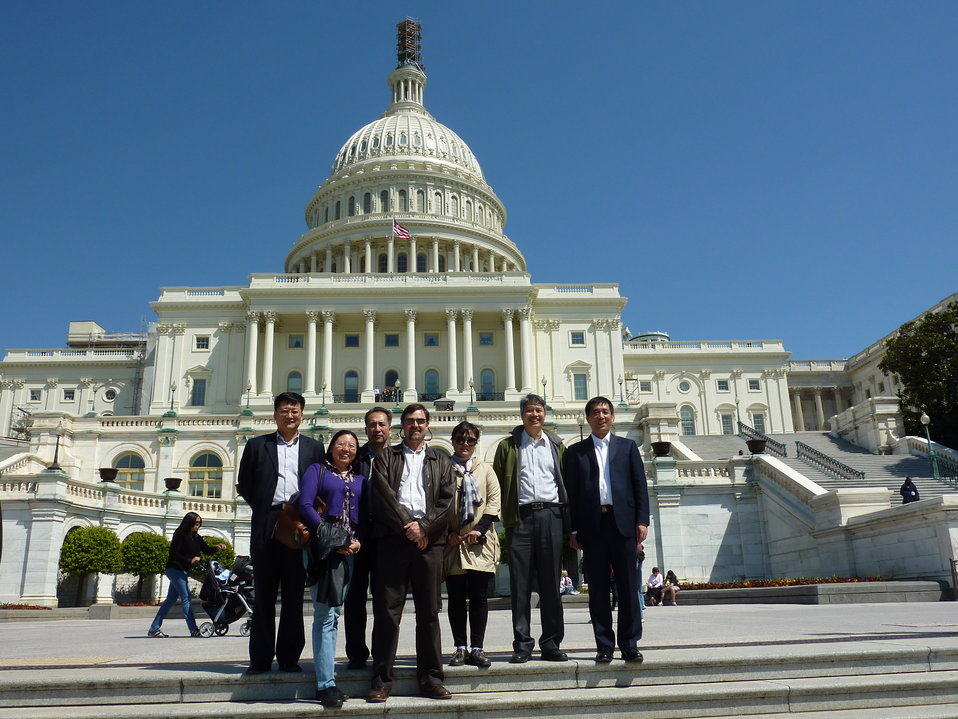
Chinese delegation in front of U.S. Capitol

FWS Biologist, Thomas Leuteritz, and a delegation from the Chinese CITES authorities stop in front of the U.S. Capitol for a photo.